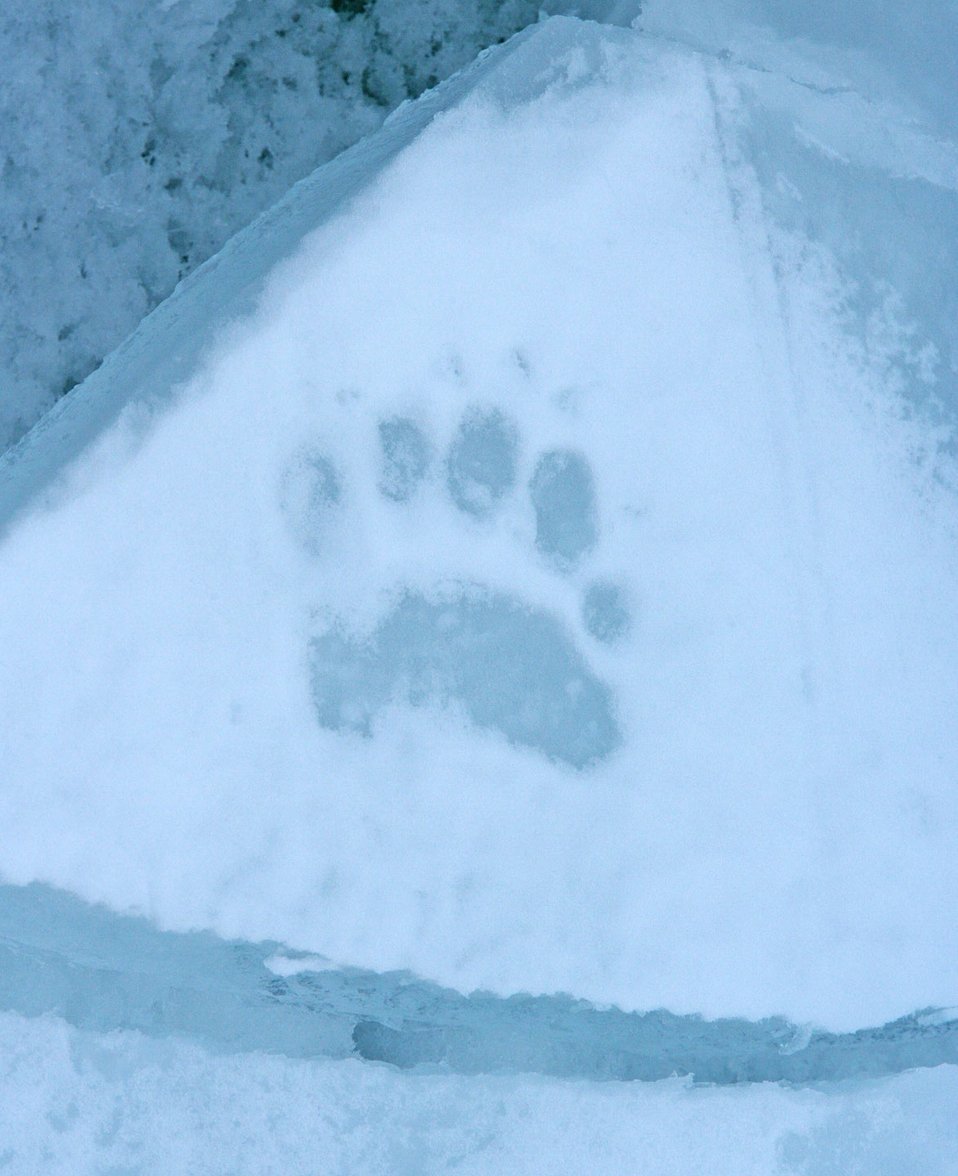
Polar bear (Ursus maritimus) tracks.